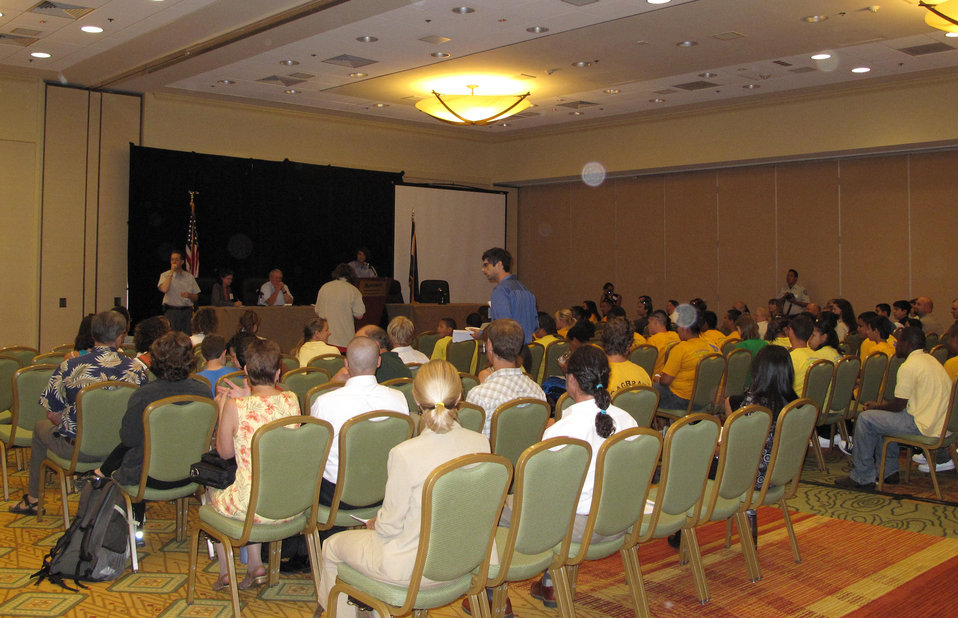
America's Great Outdoor Initiative Youth Conference